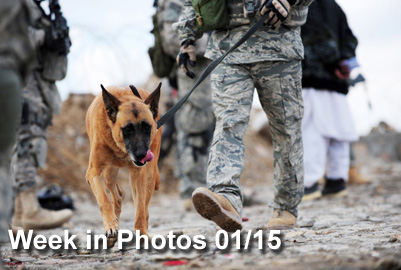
Week in Photos

Air Force Week in Photos for Jan. 15, 2010, highlights photos from around the Air Force. In this photo by Tech. Sgt. Francisco V. Govea II, Staff Sgt. James Rybacki and his military working dog Torca search for narcotics Jan. 3, 2010, at a checkpoint near Dabaray, Afghanistan.